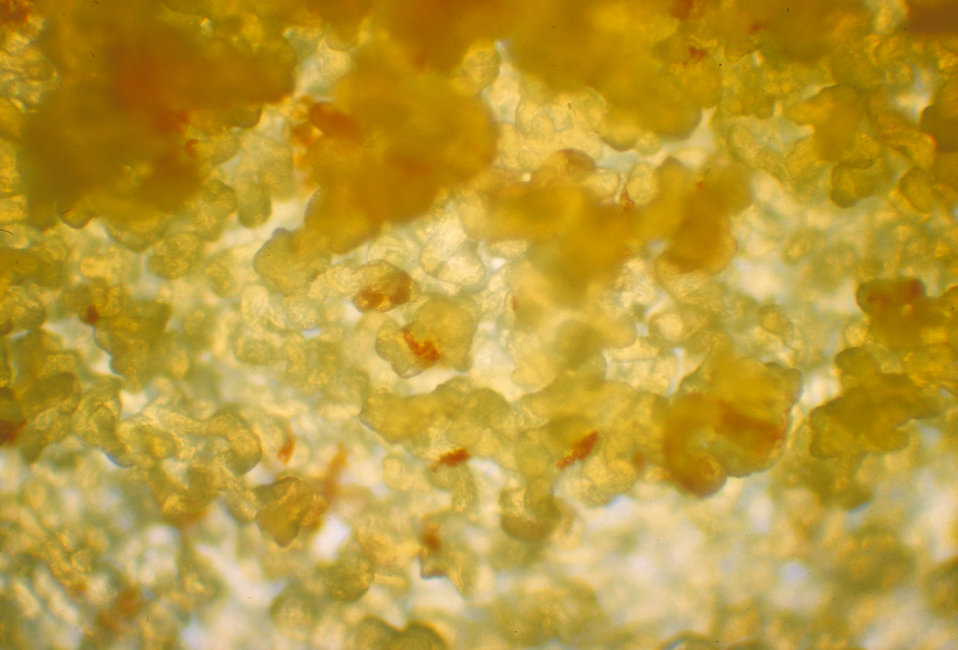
This is a plate culture of Mycobacterium balnei revealing the presence of red pigment deposits.